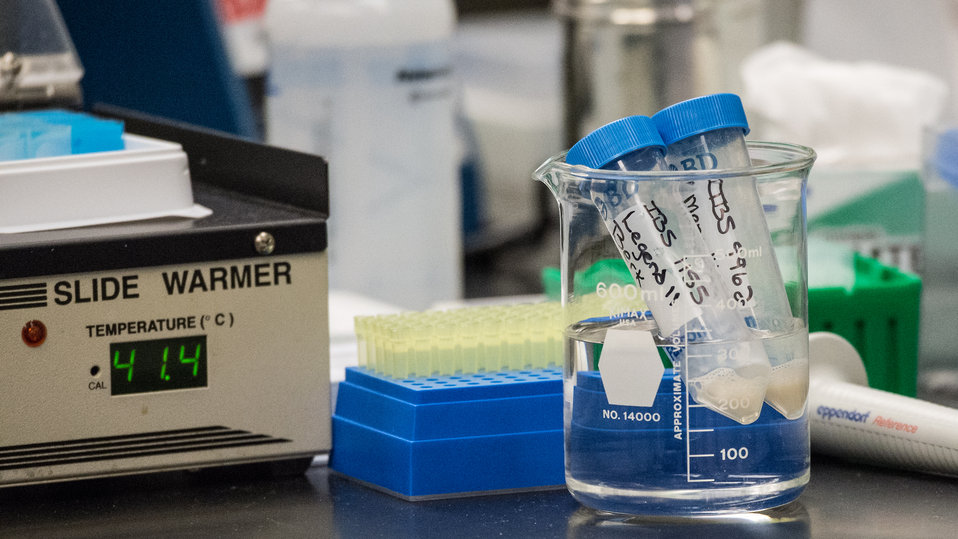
Samples of Boar sperm are brought up to temperature for scanning by an electronic microscope to evaluate their mortality, at the U.S. Department of Agriculture (USDA), Agriculture Research Service (ARS), National Center for Genetic Resources Preservation (NCGRP), in Ft. Collins, CO, on Wednesday, Nov. 6, 2013.